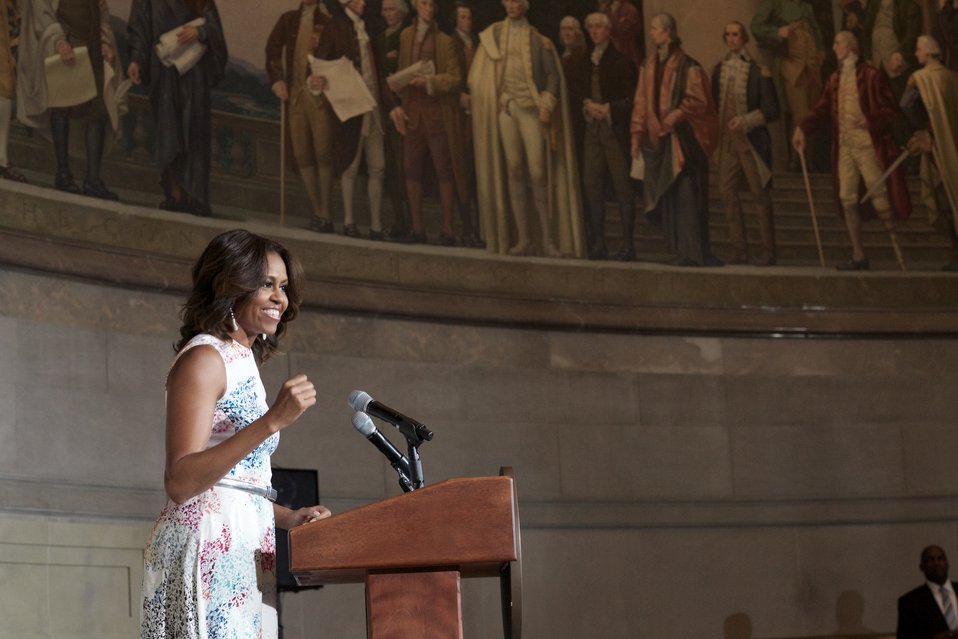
Naturalization Ceremony with Michelle Obama